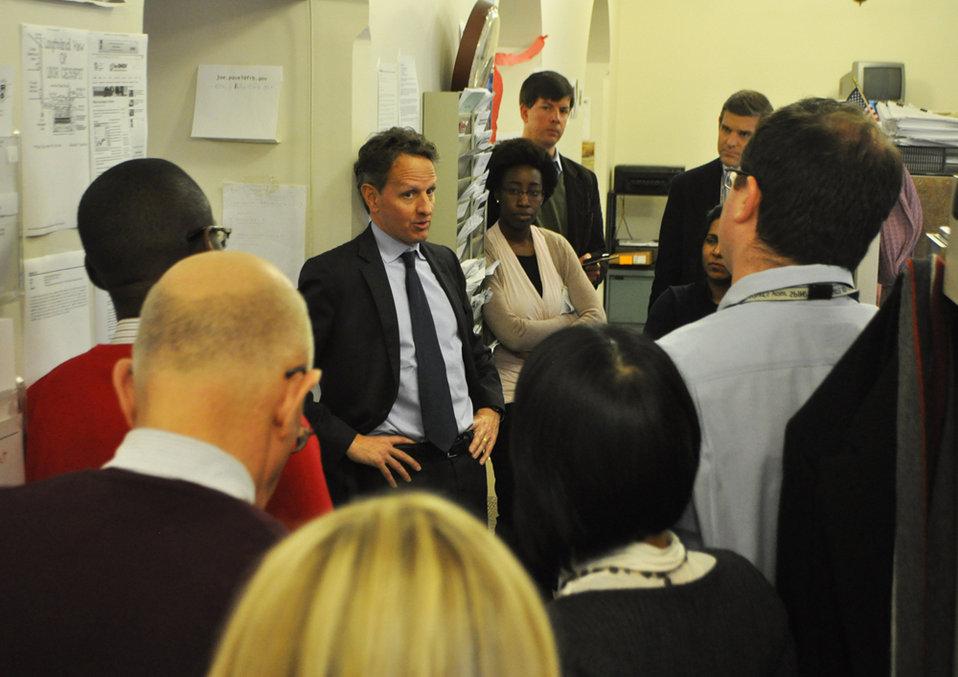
Secretary Geithner drops by the Treasury press room on his final day in office.